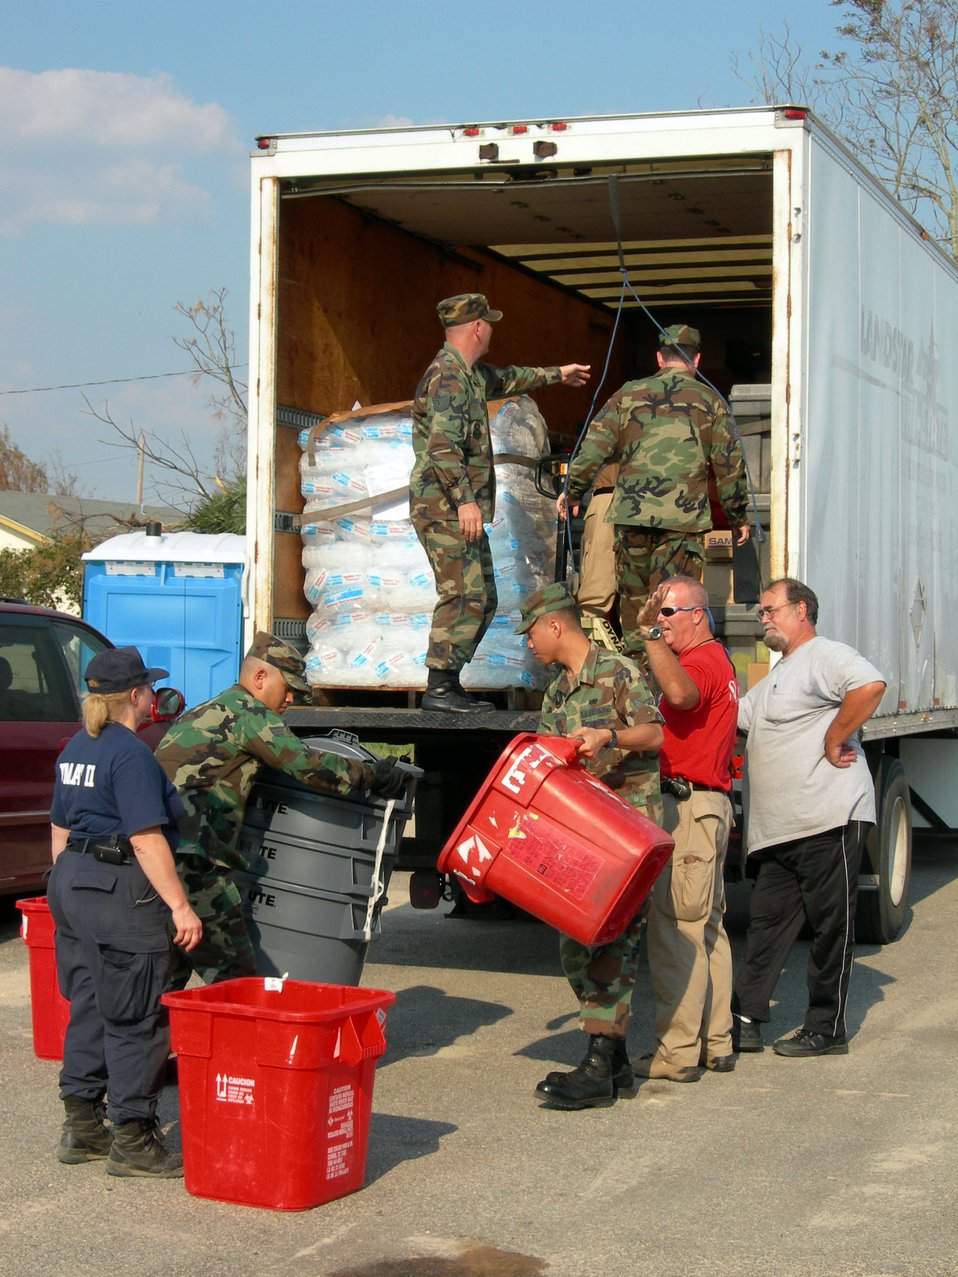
97th AEG stands up at Keesler

MISSISSIPPI -- A group of Airmen with the 97th Air Expedtionary Group helps unload medical supplies at one of the Federal Emergency Management Agency's medical assistance team locations along the Gulf Coast. The group, comprising Airmen throughout the United States who began arriving at nearby Keesler Air Force Base on Sept. 6, was established to provide humanitarian assistance to those affected by Hurricane Katrina.